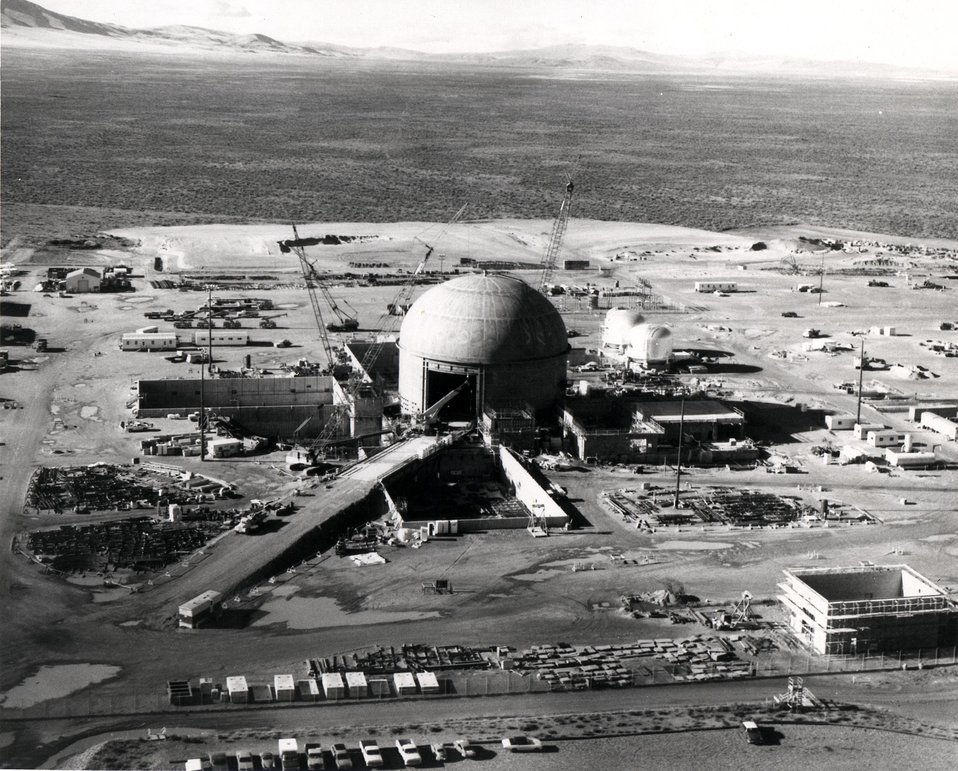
A construction photograph made in mid-1973 of the Fast Flux Test Facility near Richland, Washington. c. 1973.